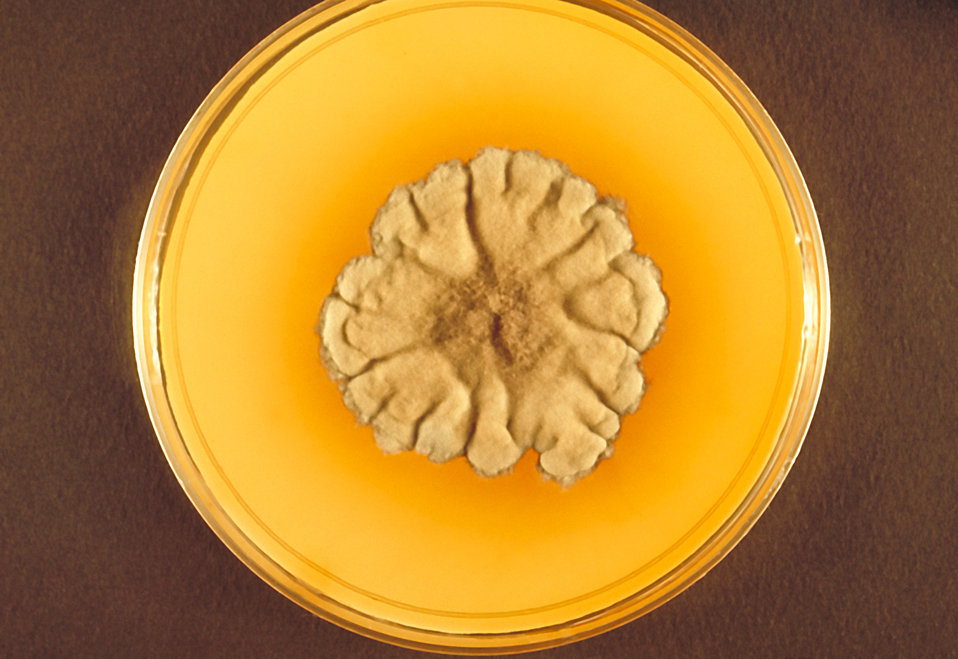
This image shows a plate culture growing the fungus Madurella grisea (Georgia isolate).